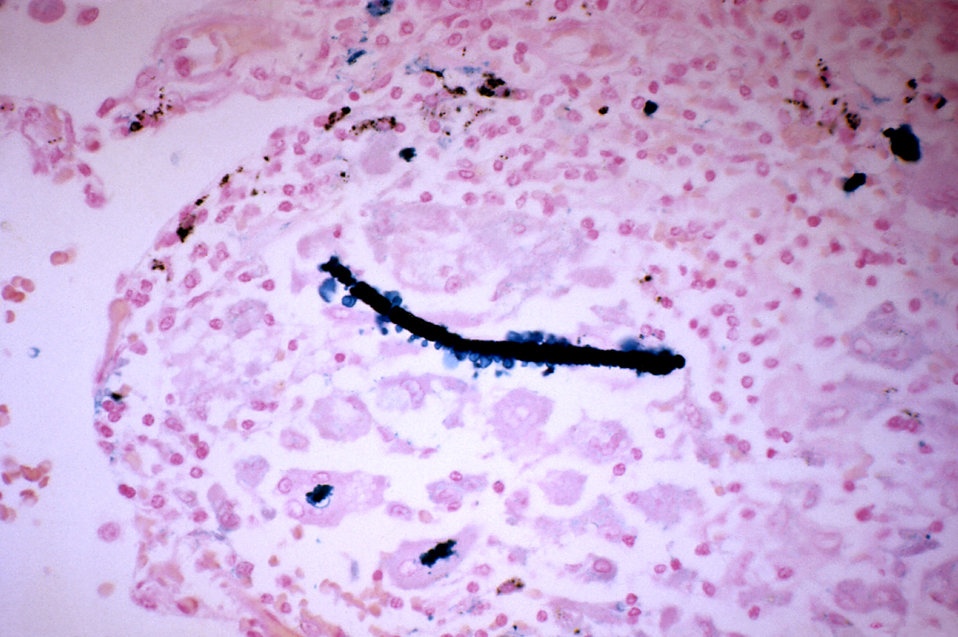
Histopathology of ferruginous body, lung